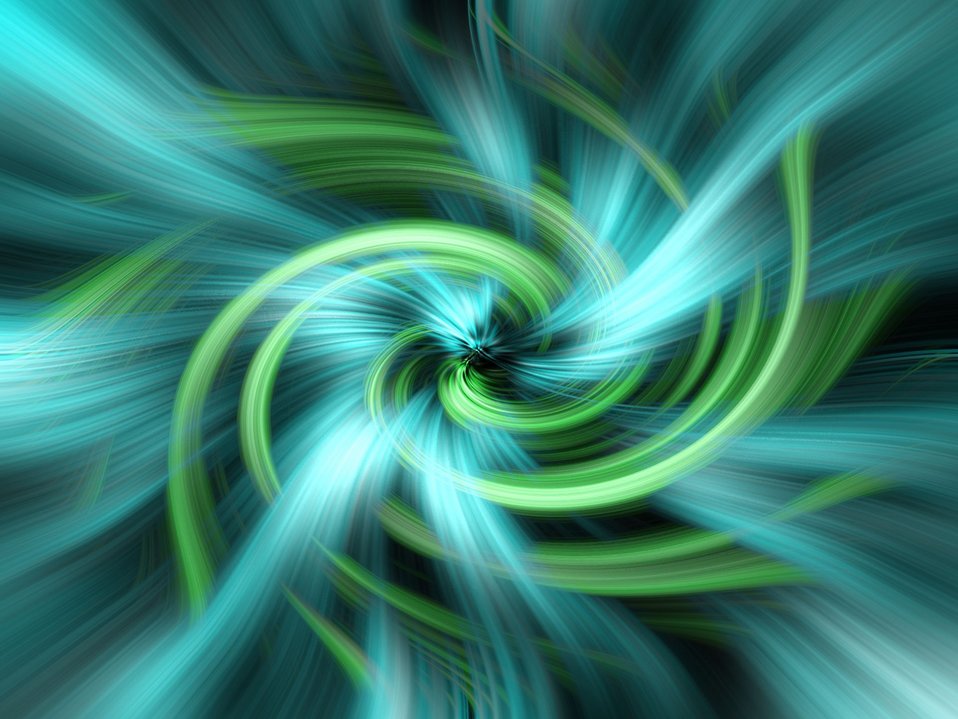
Swirls 2

Pretty abstract background.